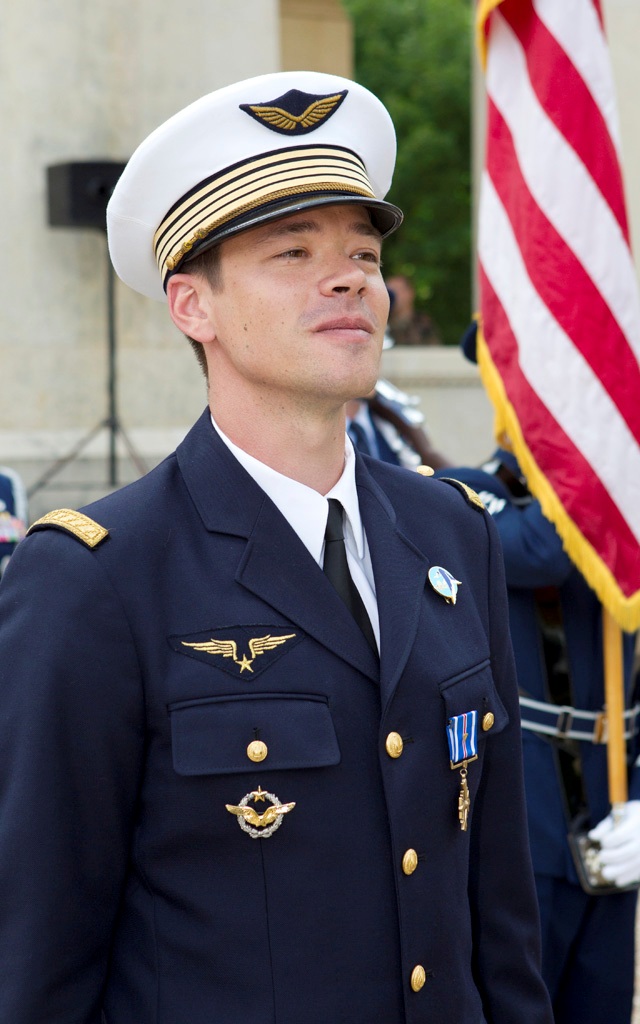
Honoring a hero

French air force Maj. Guillaume Vernet shows his pride after receiving the Distinguished Flying Cross with Valor from Air Force Chief of Staff Gen. Norton Schwartz July 13, 2011, at the Lafayette Escadrille Memorial in Marnes-la-Coquette, France. Vernet was awarded the decoration for repeatedly flying into hostile territory in December 2009 while deployed to Afghanistan as an exchange officer with the 41st Rescue Squadron from Moody Air Force Base, Ga. During that mission, Vernet rescued an urgent casualty whose injury put the lives of 160 British soldiers in jeopardy.